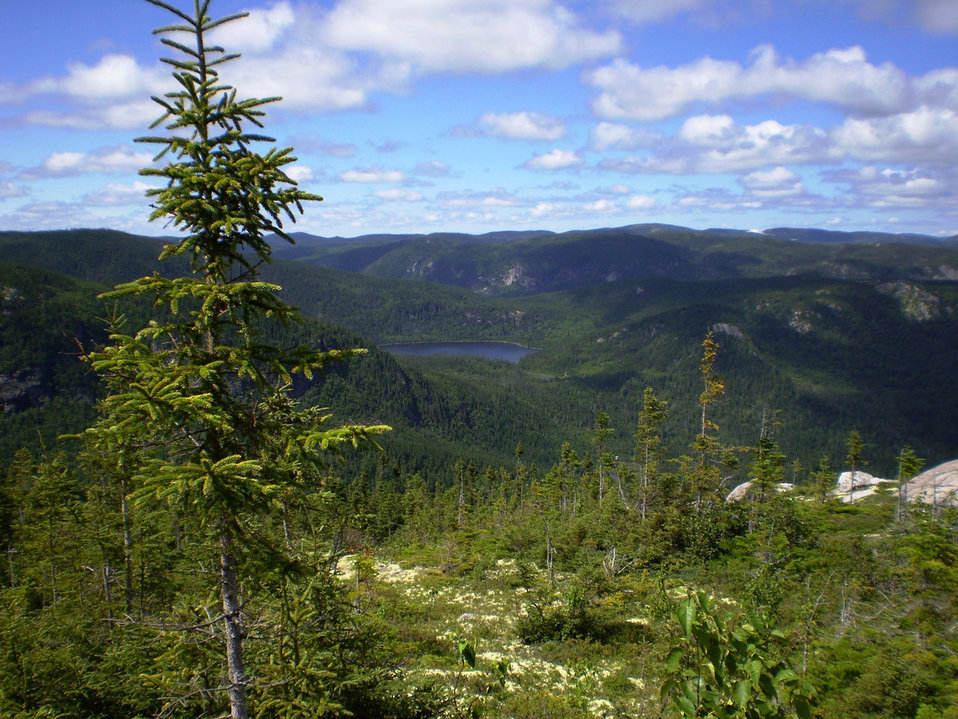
On top of charlevoix

Landscape from a mountain.